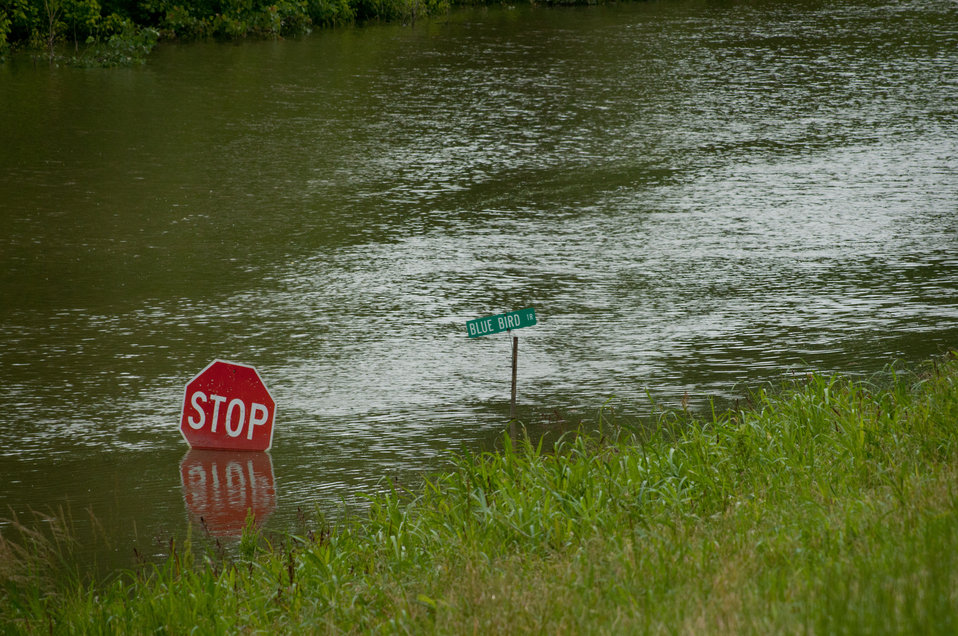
Floods waters from Mississippi River inundated Tunica Cutout, MS on Sunday, May 15. 2011. The entire population was relocated nearby to the protected side of the levee.